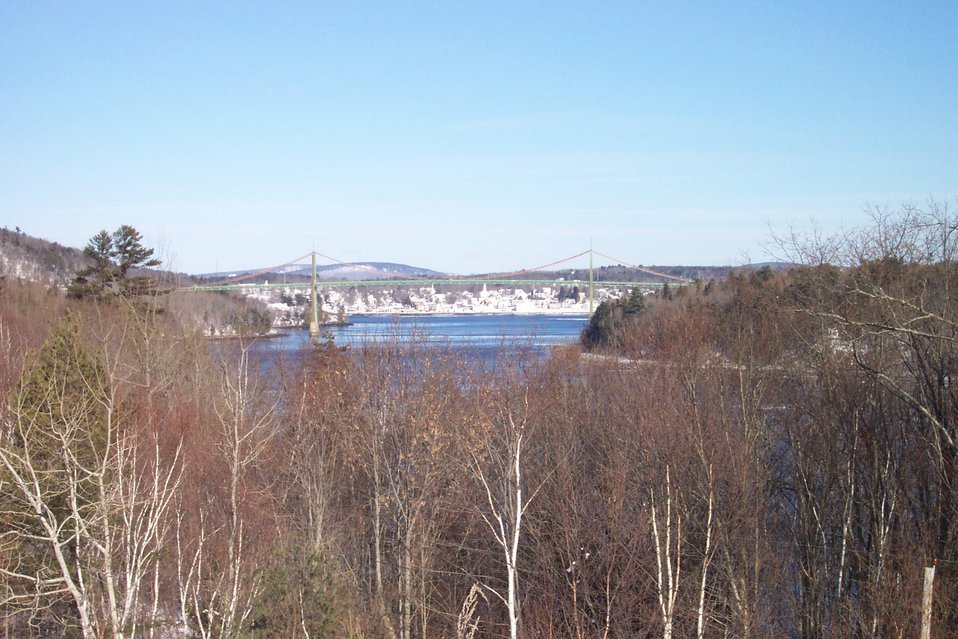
The Waldo-Hancock suspension bridge with Bucksport in the background.